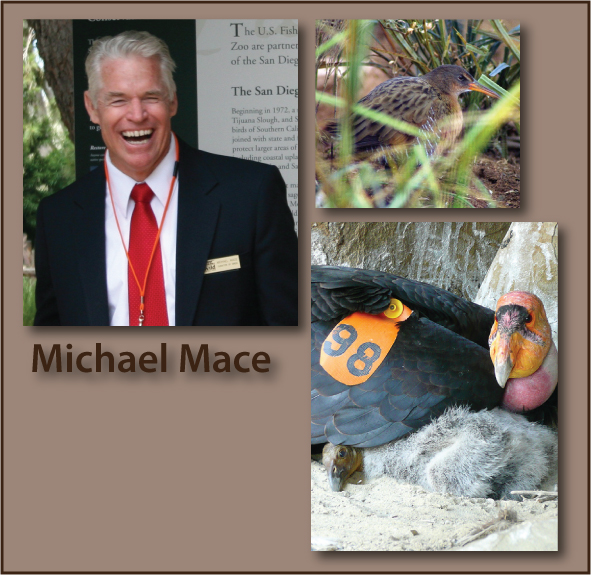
Recovery Champion Michael Mace, curator of Birds at the San Diego Zoo Safari Park, with a light-footed clapper-rail and California condor

The Pacific Southwest Region of the U.S. Fish and Wildlife Service has announced their three awardees of the agency’s 2010 Recovery Champion Award. Michael Mace, curator of Birds at the San Diego Zoo Safari Park is receiving an award today for his work in helping to recover the California condor and light-footed clapper rail. His efforts have made a marked difference to these bird populations. Today there are nearly 200 condors in the wild. This would not have been possible without Mace’s strong conservation actions starting more than 30 years ago. When the survival of the condors was in question, he advocated for capturing the last wild condors to start a captive-bred population with the vision of returning these birds to the wild.